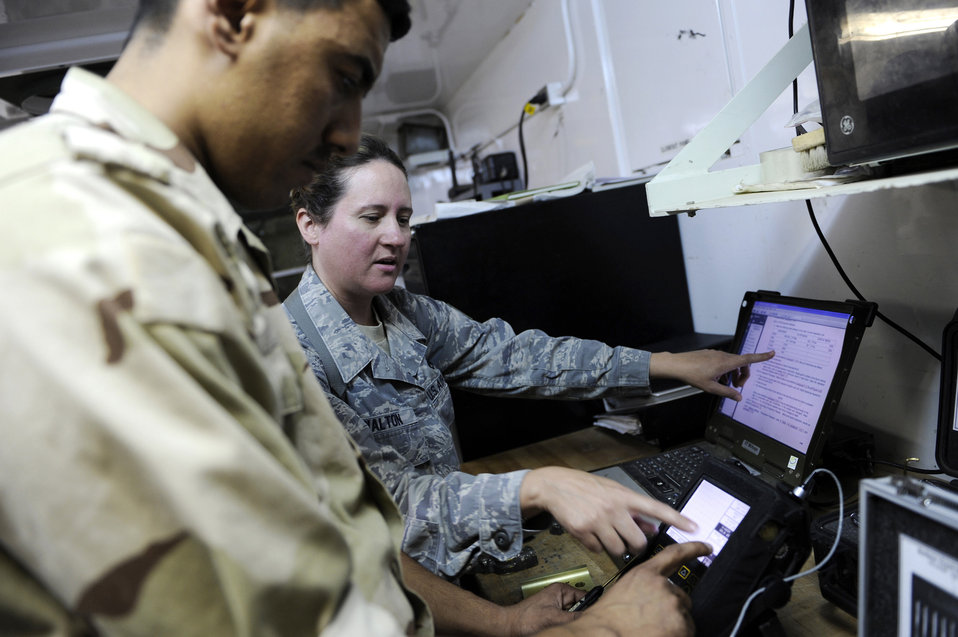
Airmen assist Iraqis with maintenance training

Tech. Sgt. Andrea Walton assists an Iraqi air force maintenance student using specialized tools to find microscopic cracks and flaws in aircraft parts during a training visit to the Army's NDI backshop July 13 at Taji Air Base, Iraq. Sergeant Walton is a nondestructive inspection instructor with the 721st Air Expeditionary Advisory Squadron.